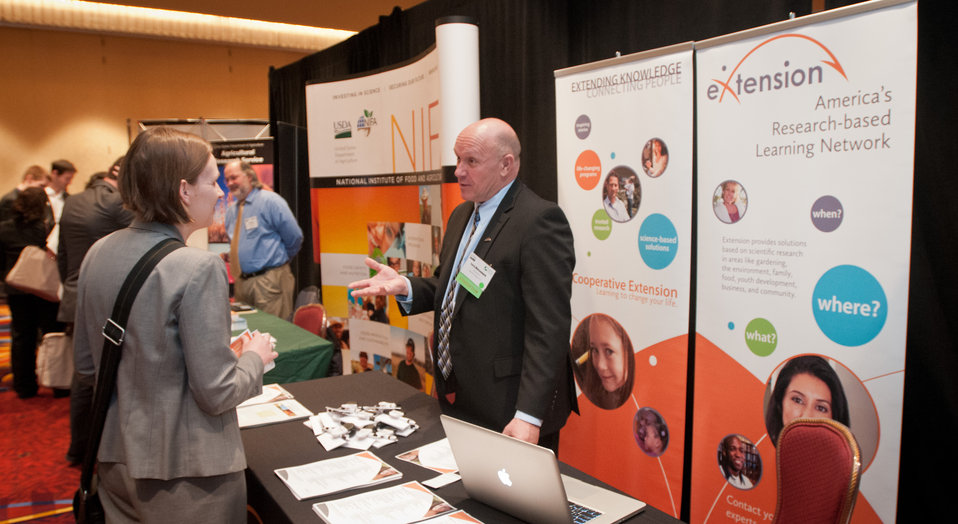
eXtension Initiative Communications and Marketing Manager 'Terry Meisenbach talks with a participant at the 2013 Agricultural Outlook Forum, at the Crystal Gateway Marriott Hotel, Arlington, Virginia on Thursday, Feb. 21, 2013. This annual Forum brings together producers, policymakers, business, government, and industry leaders to meet, exchange ideas, and discuss timely agriculture issues.